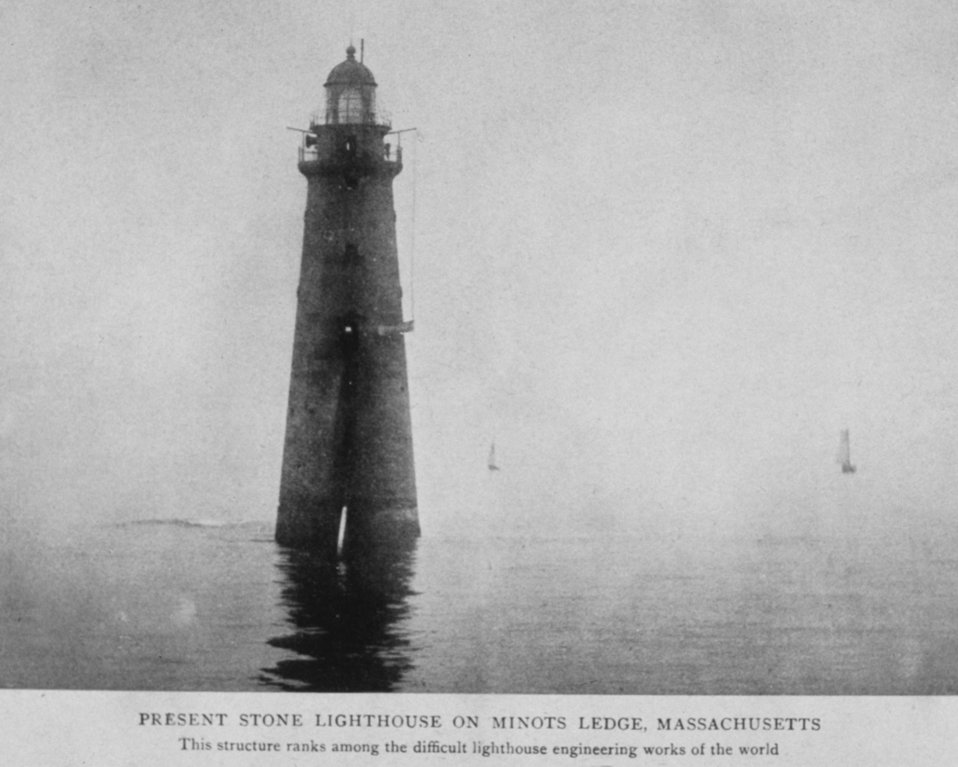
Present Stone Lighthouse on Minots Ledge, Massachusetts. This structure ranks among the difficult lighthouse engineering works of the world. In: 'Lighthouses and Lightships of the United States' by George R. Putnam, p. 76, 1917. Houghton Mifflin and Company, Boston. Library Call No. 527.7 P98.